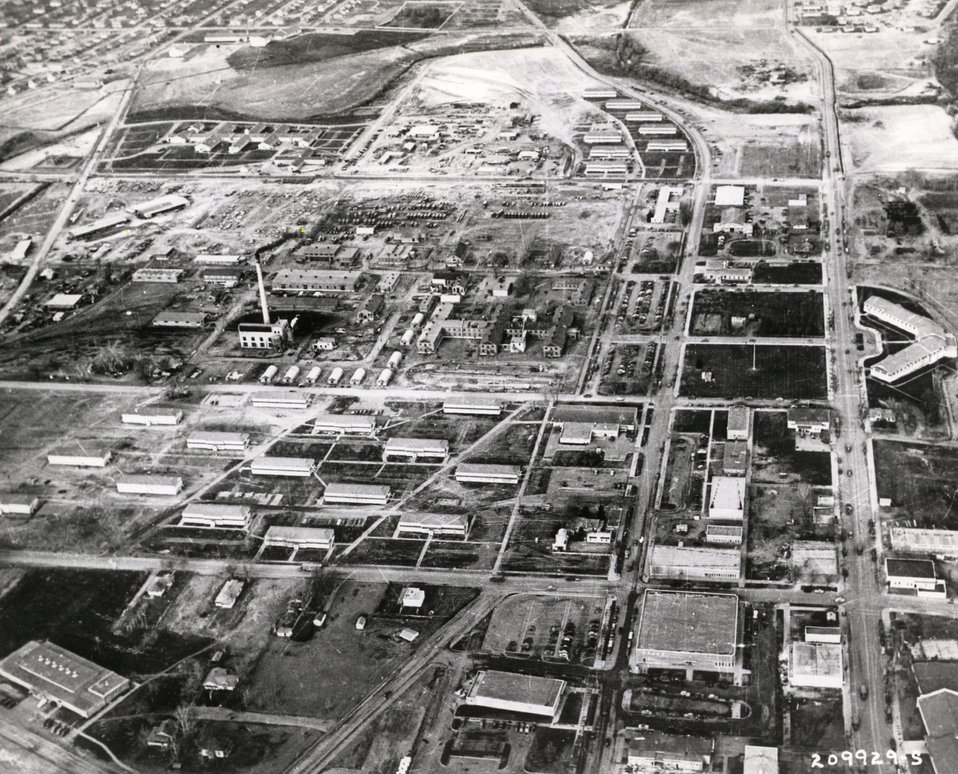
Aerial view of Richland. Circa 1945.